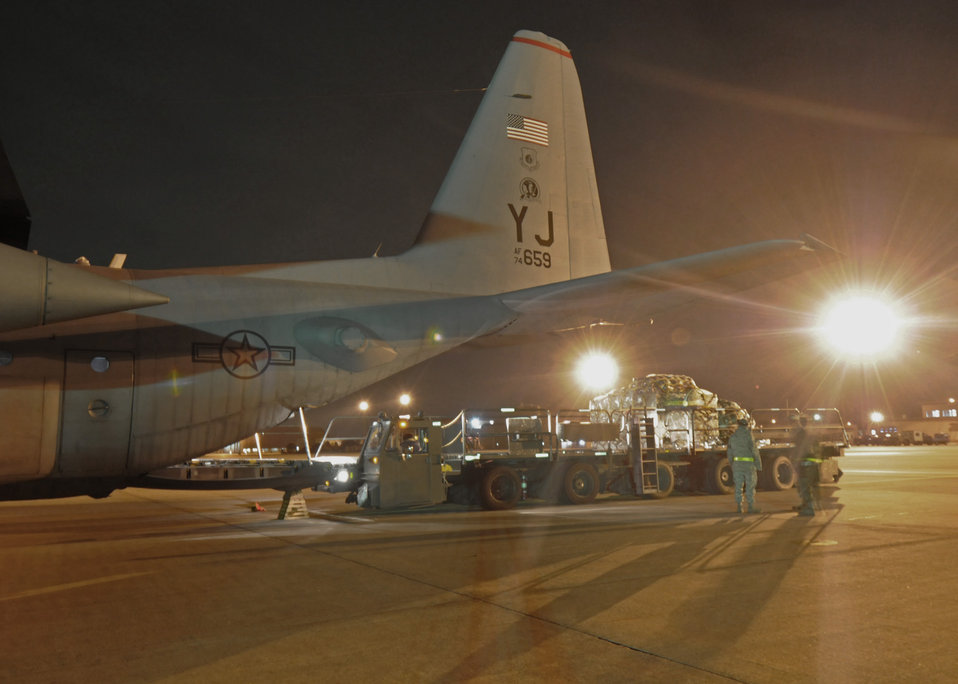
Bringing in the load

Members of the 36th Airlift Squadron and 730th Air Mobility Squadron guide a pallet into the cargo compartment of a C-130 Hercules during Phase I of Exercise Beverly Morning 09-03 March 31 at Yokota Air Base, Japan. Base personnel will be conducting the exersice March 30 through April 3 to maintain operational readiness.